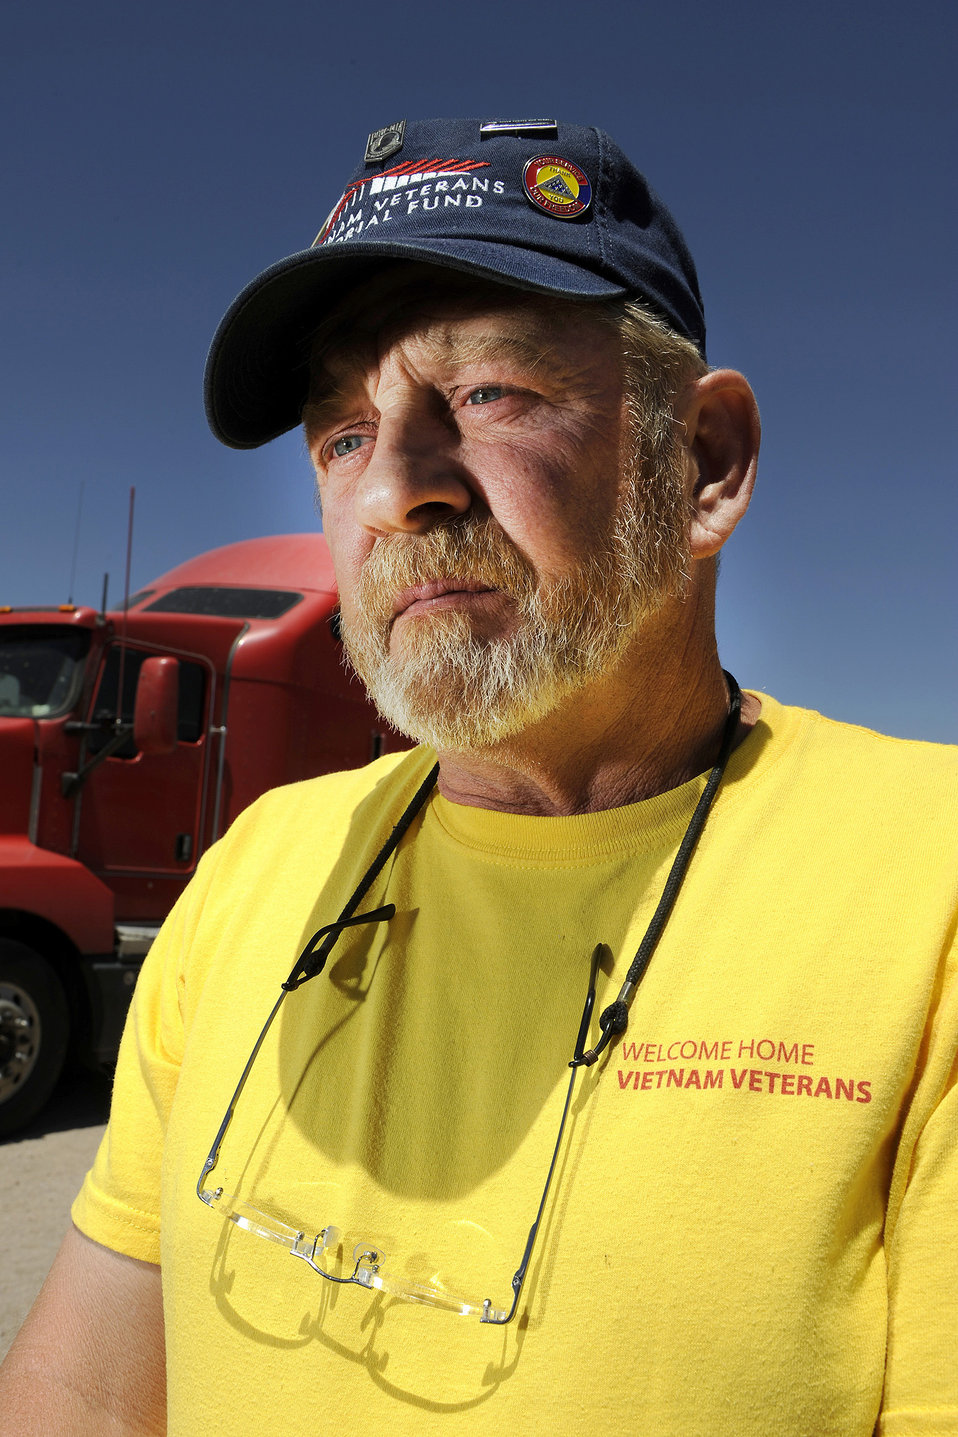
Traveling Vietnam Wall

Bob Dobek is the site manager and driver for the traveling Vietnam Memorial Wall.. Mr. Dobek brought the memorial to Colorado June 7, 2011, for a six-day display at Fort Carson. He was escorted by approximately 35 motorcyclist, including members of the Patriot Guard Riders during the trip.